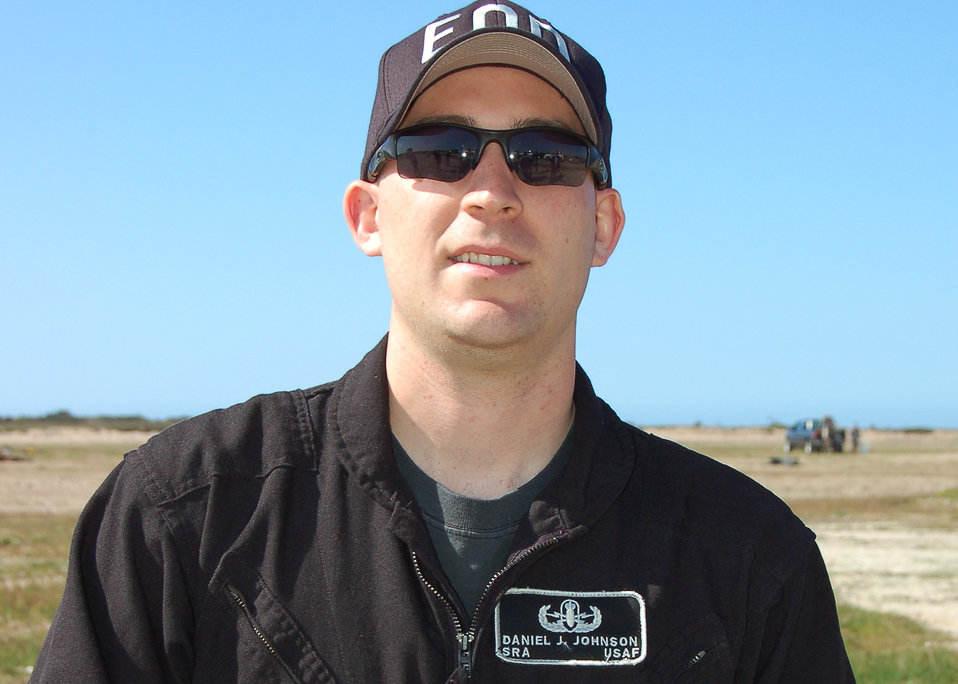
Vandenberg EOD Airman killed in Afghanistan

VANDENBERG AIR FORCE BASE, Calif. - Senior Airman Daniel Johnson, from the 30th Civil Engineer Squadron?s Explosive Ordnance Disposal Flight here, died while conducting an EOD operation in Afghanistan on Tuesday, Oct. 5, 2010. Airman Johnson was conducting EOD operations in an area west of Kandahar, Afghanistan, when an improvised explosive device detonated.